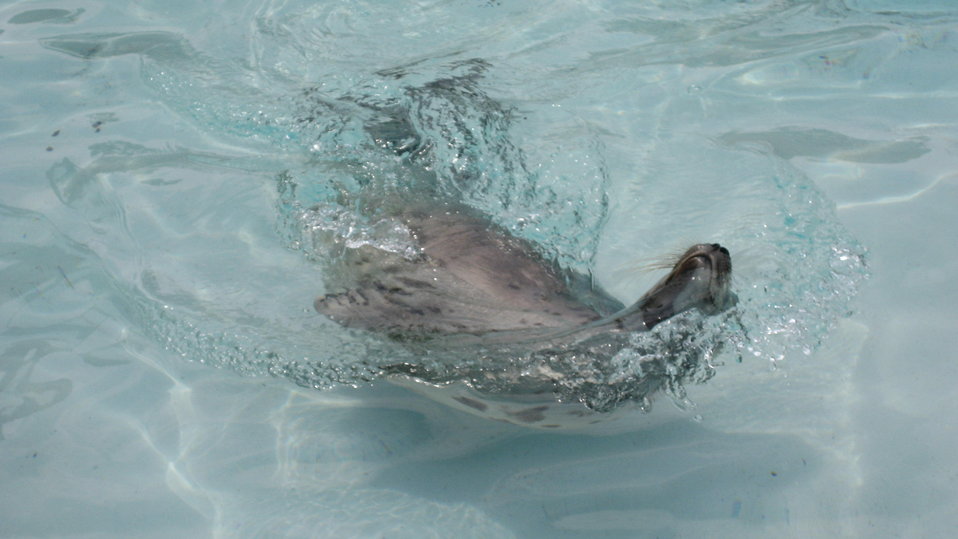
Parc Aquarium Du Quebec